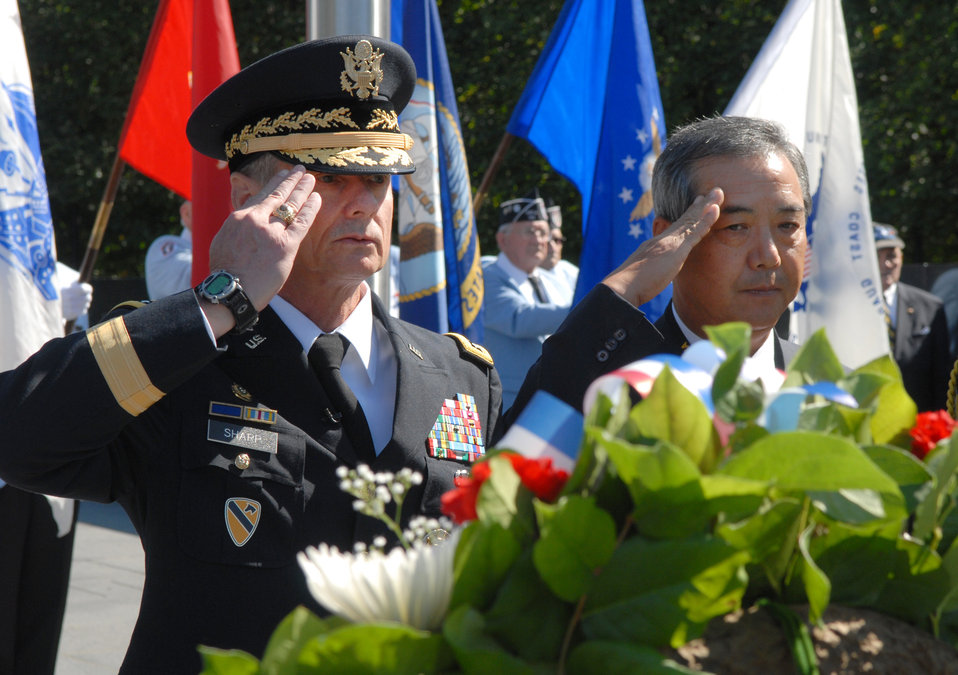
Korean War memorial

Army Gen. Walter L. Sharp, commander of U.S. Forces Korea, and Jung-ki